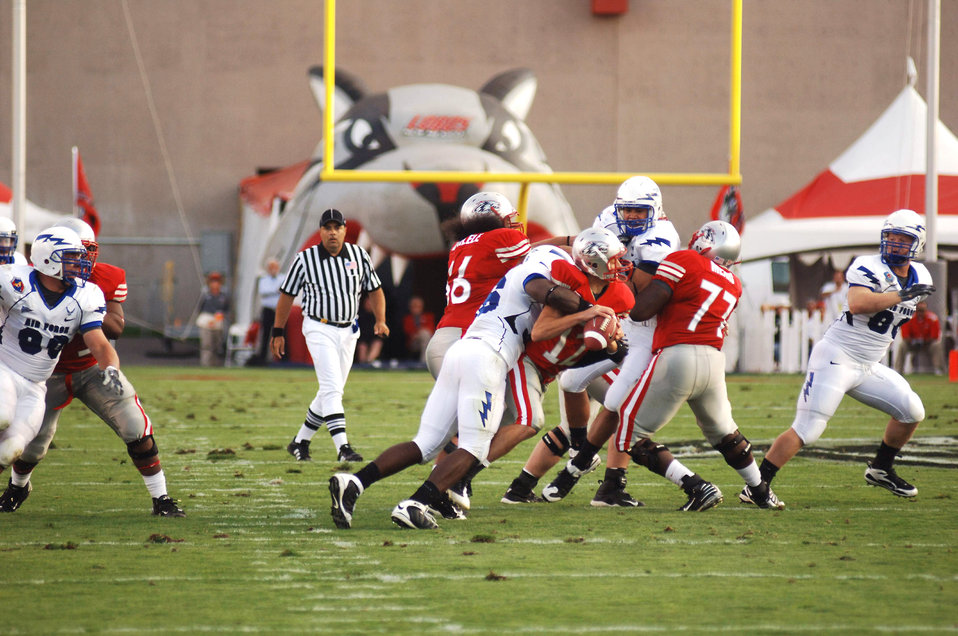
Football: Falcons feast on turnovers, down New Mexico 37-13

U.S. Air Force Academy outside linebacker Andre Morris Jr. wraps of New Mexico quarterback B.R. Holbrook for a 7-yard loss during football action Sept. 19, 2009, at Albuquerque, N.M. Morris ended the game with two sacks for 11 yards, as the Falcons recorded a season-high four quarterback sacks.